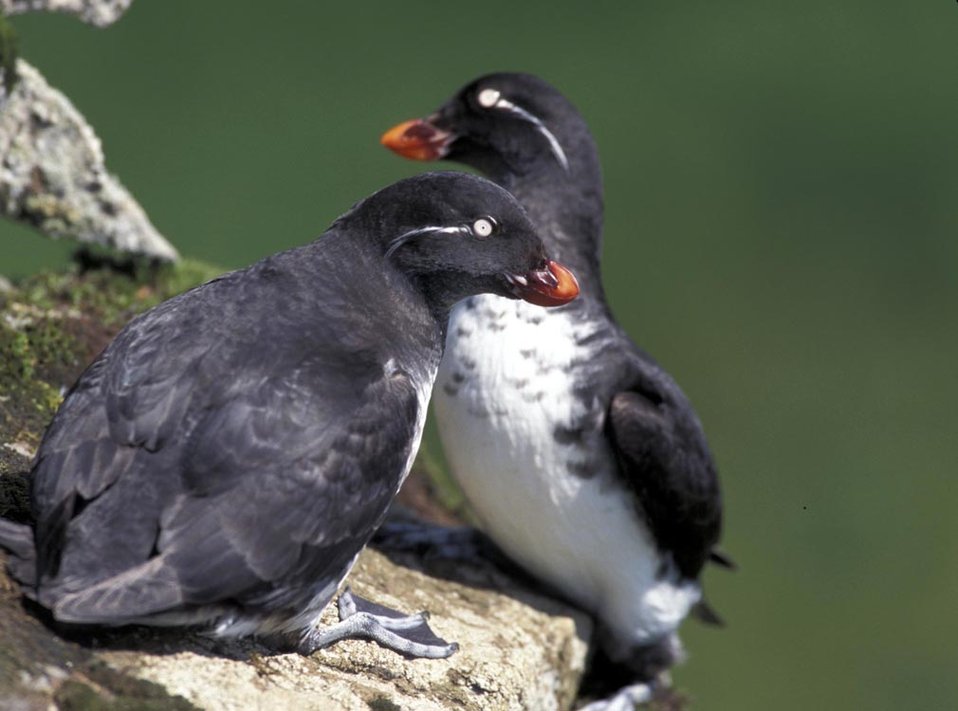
Auklets

Parakeet auklets.